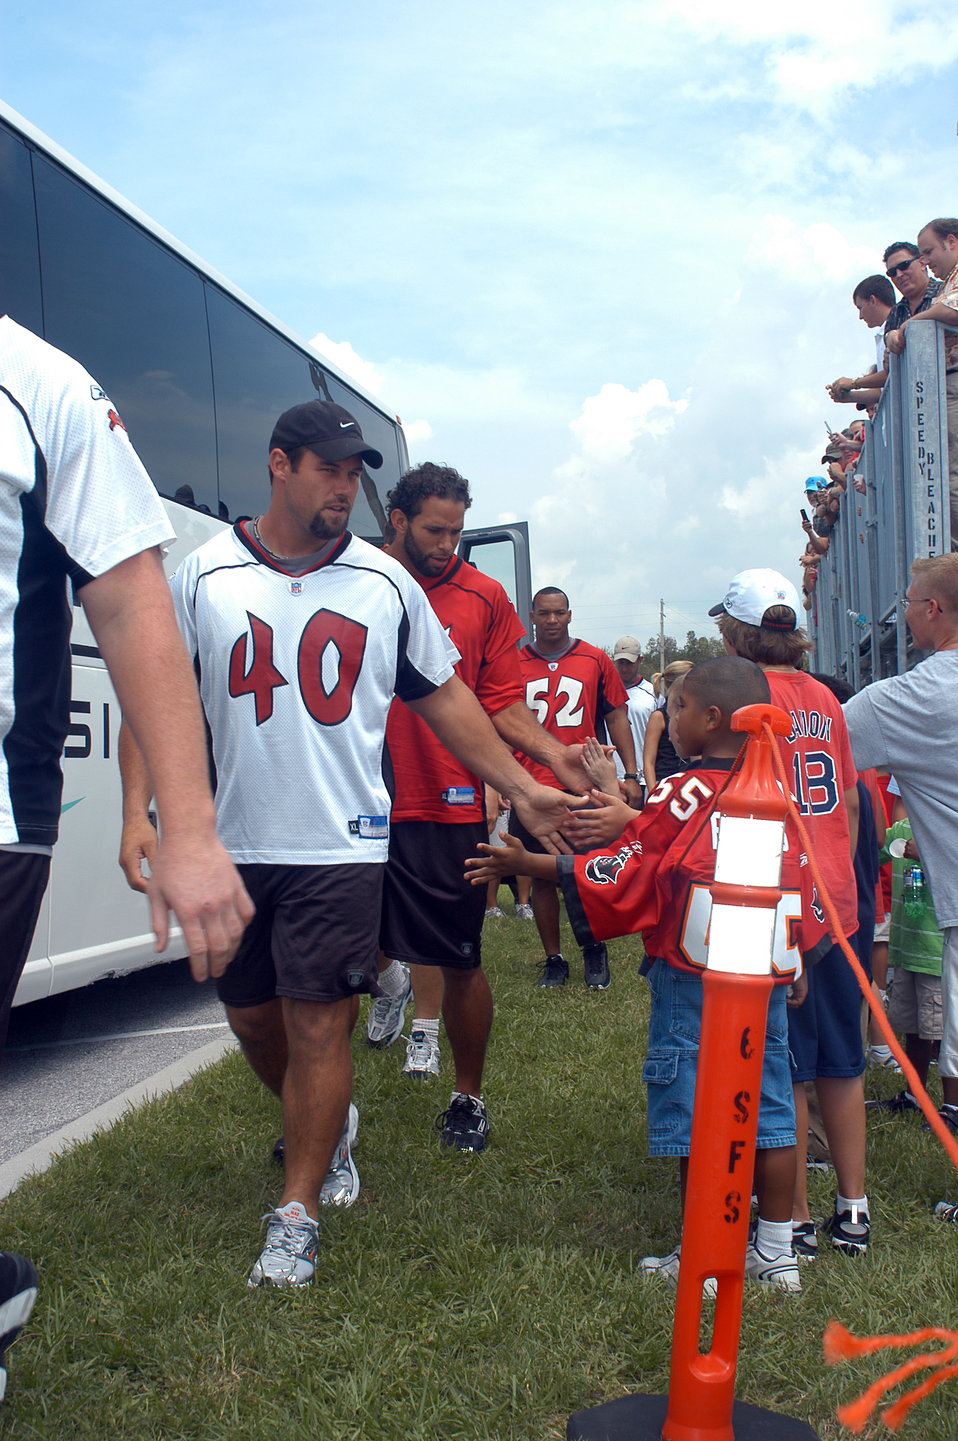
Tampa Bay plays at MacDill

Mike Alstott, Tampa Bay Buccaneers fullback, greets fans before the pre-game, walkthrough practice held at MacDill Air Force Base, Fla., on Aug. 18. The practice was closed to the general public but open to base personnel. Airmen who attended the practice were able to get an up-close look at the 2006 Buccaneers team.